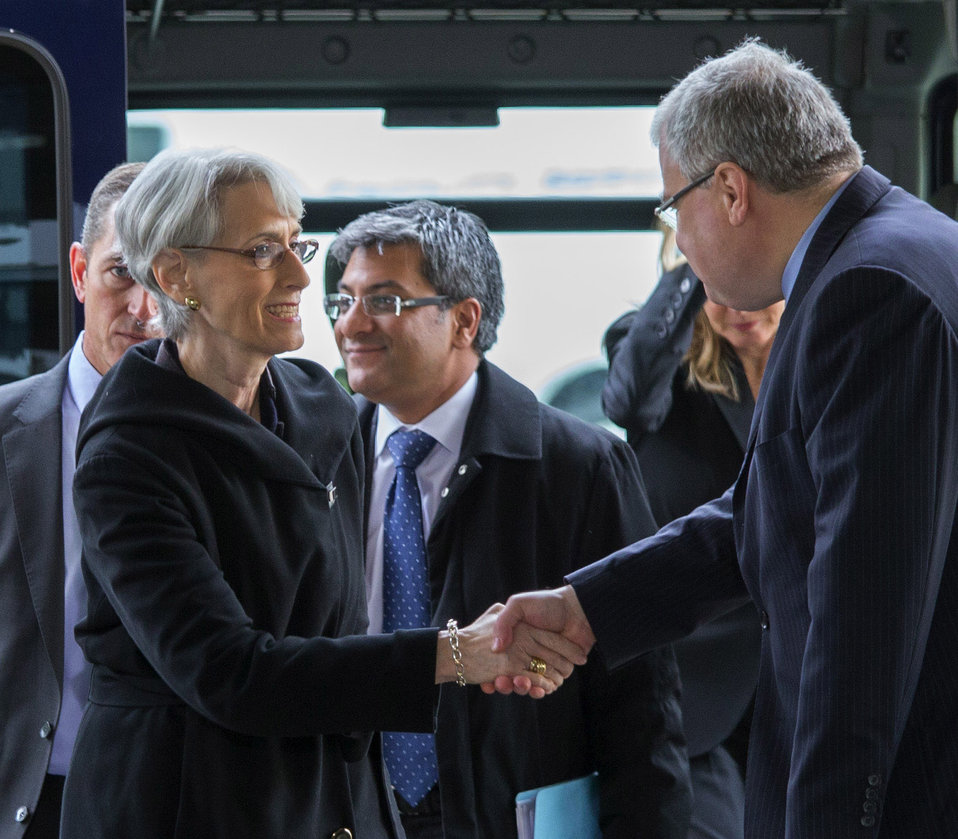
Under Secretary Sherman Arrives for the UN-Hosted Meeting on Syria

Under Secretary of State for Political Affairs Wendy R. Sherman arrives at the United Nations Offices in Geneva, Switzerland, on November 5, 2013. Under Secretary Sherman is the head of the U.S. delegation to the UN-hosted meeting on Syria.